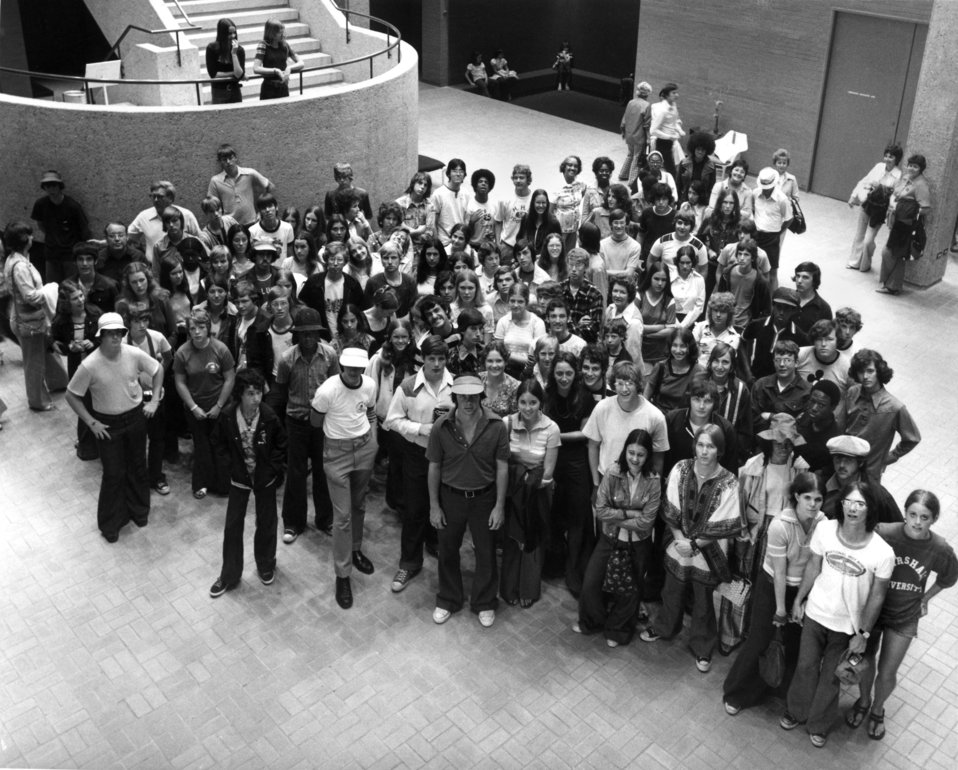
High School Group from Huntington West Virginia at the American Museum of Science and Energy in Oak Ridge

75-143 DOE photo by Frank Hoffman High School Group from Huntington West Virginia at the American Museum of Science and Energy in Oak Ridge Tennessee 4-14-1975